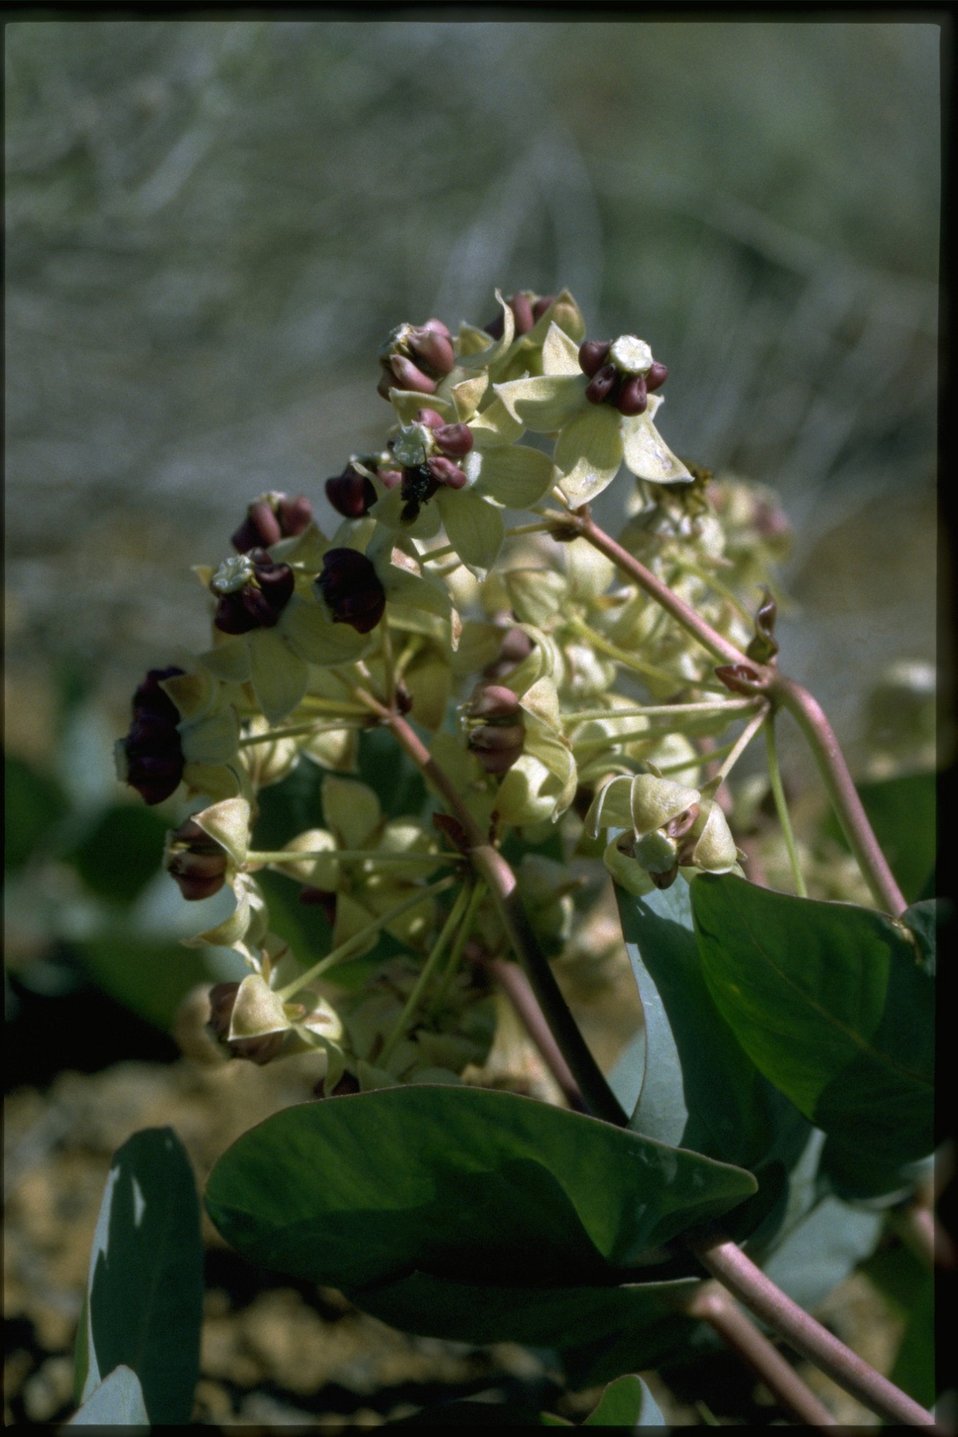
Closeup shot of Asclepias cordifolia.